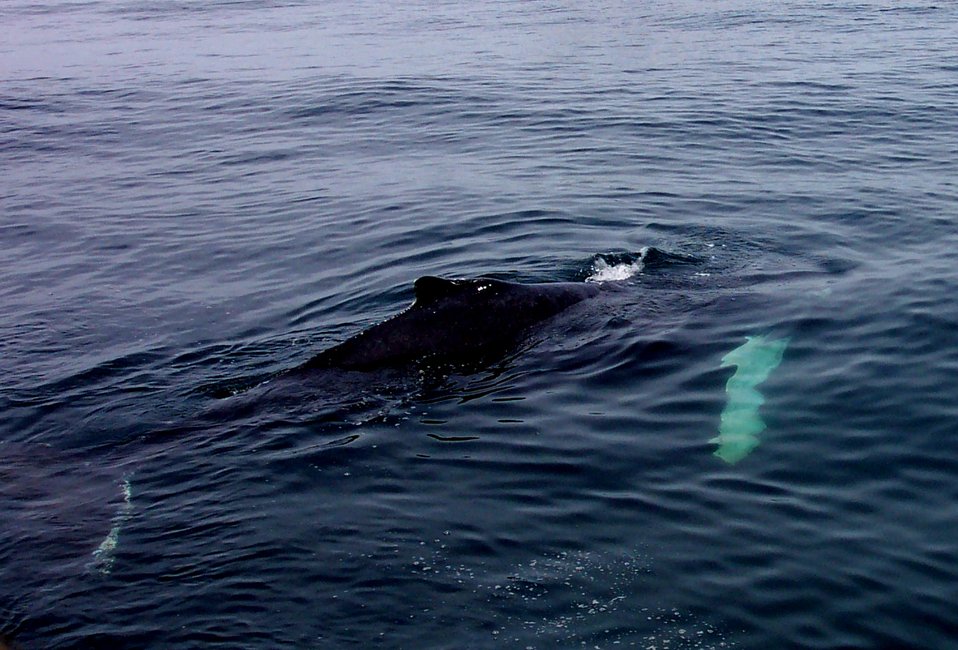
A humpback whale in the Gulf of Maine about 20 miles south of Bar Harbor.